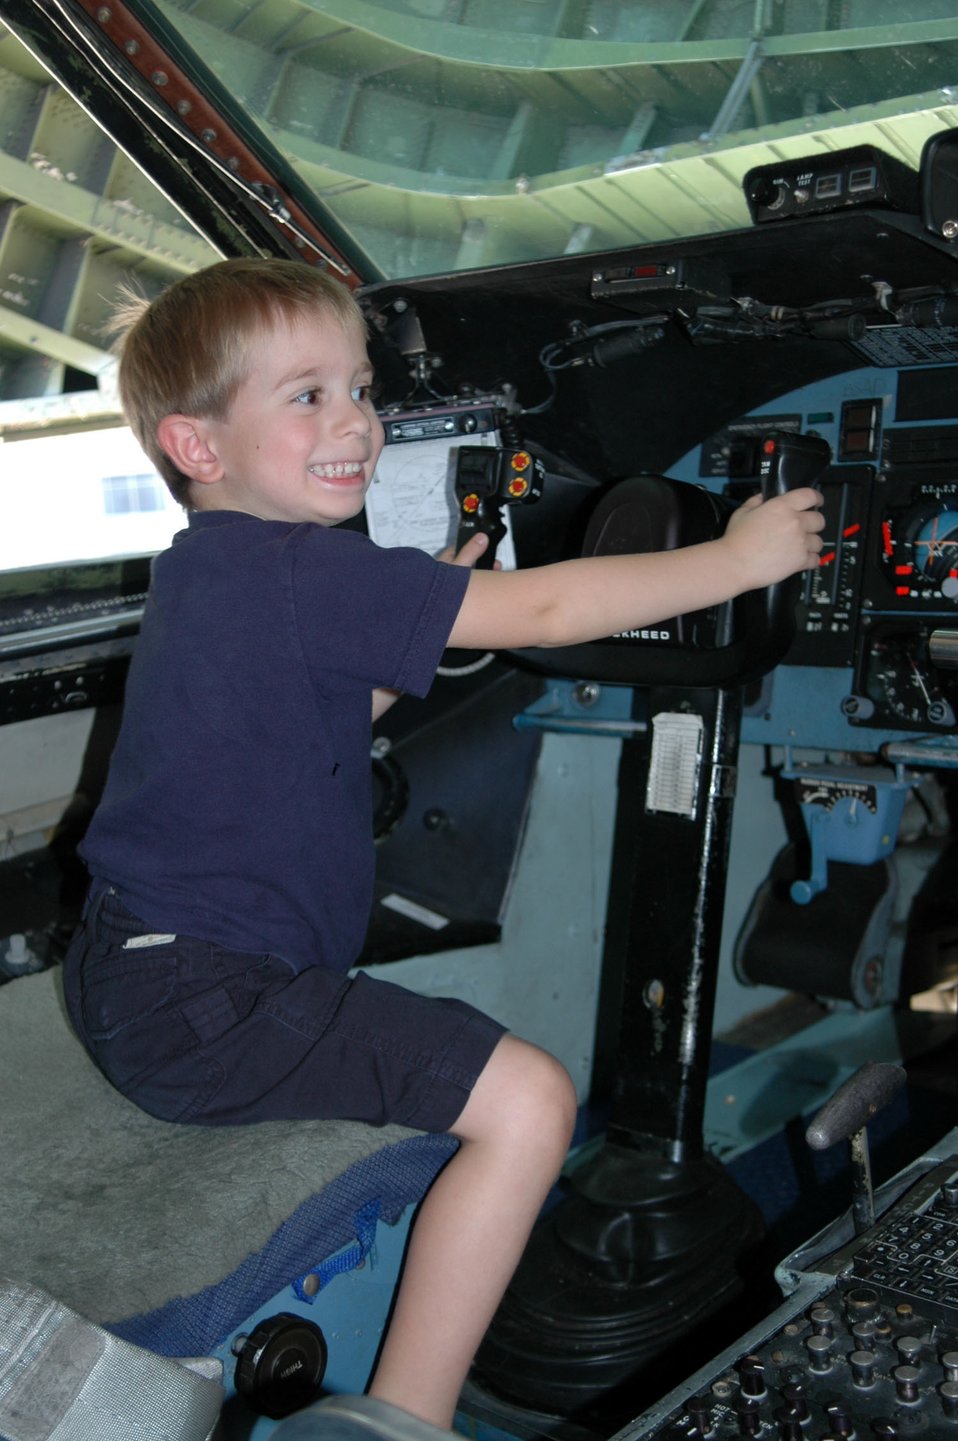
Reserve wing welcome change to flying wing

WRIGHT-PATTERSON AIR FORCE BASE, Ohio -- Ethan Sigler, 4, enjoys his turn in the pilot's seat of a C-5 Galaxy here. Ernie Sigler took his son to the C-5 arrival ceremony Oct. 3 so they could get a first-hand look at the plane. Mr. Sigler is an information technology program manager for the National Air and Space Intelligence Center's communication and information directorate.